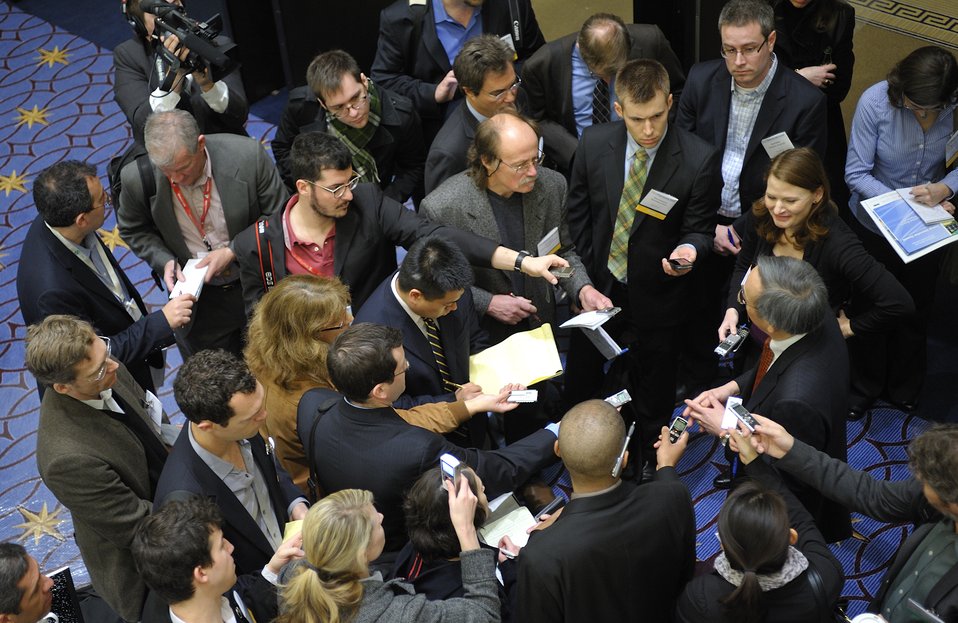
ARPA-E Energy Innovation Summit 2011, 22 of 83

Steven Chu, Secretary, United States Department of Energy holds an impromptu press avail after his Keynote.